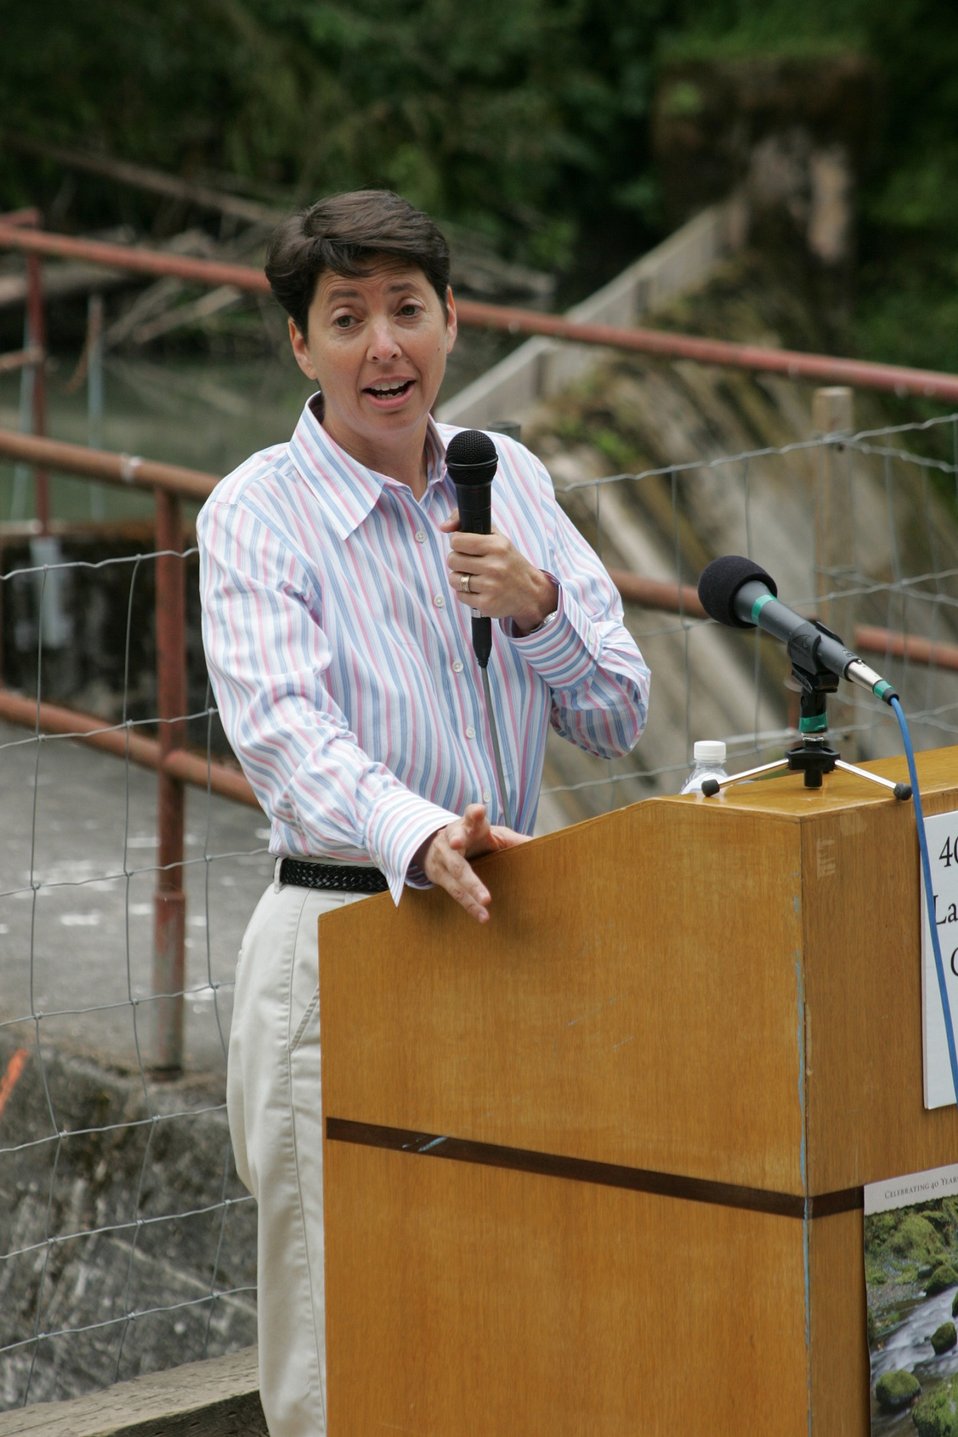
Sue Doroff, Vice President Western Rivers Conservancy, speaks during the Four C's Award at Little Sandy Dam.